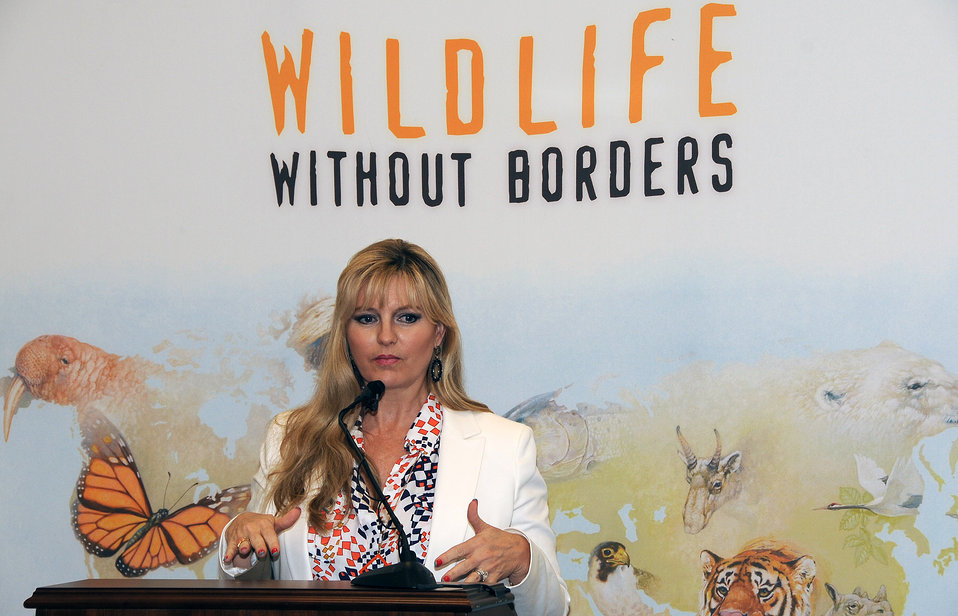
Save Vanishing Species on Capitol Hill

Karie Ross (Dombrowski) creator of Pennies for Paws program